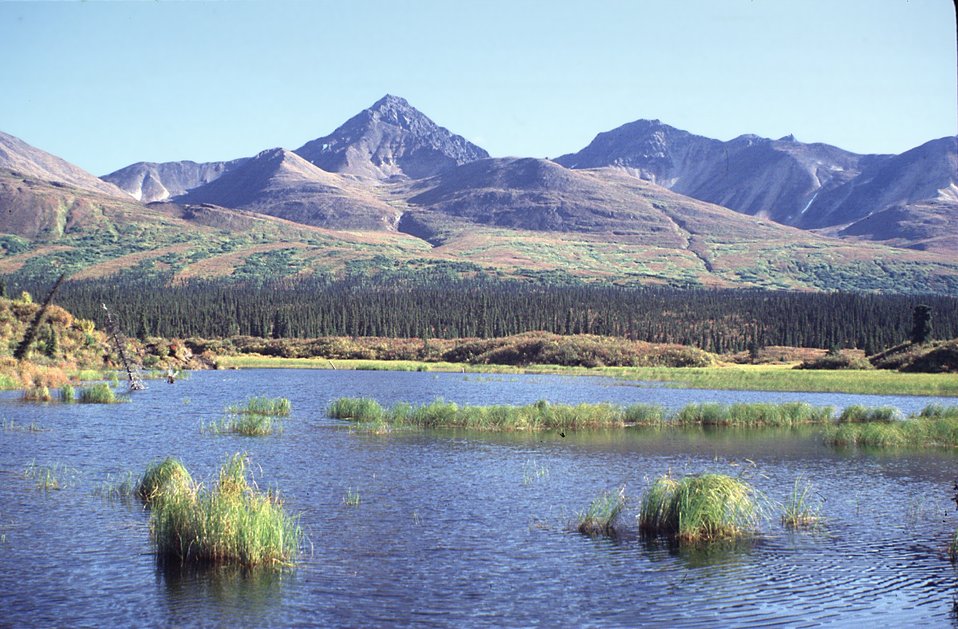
Pond along Denali Highway, Alaska